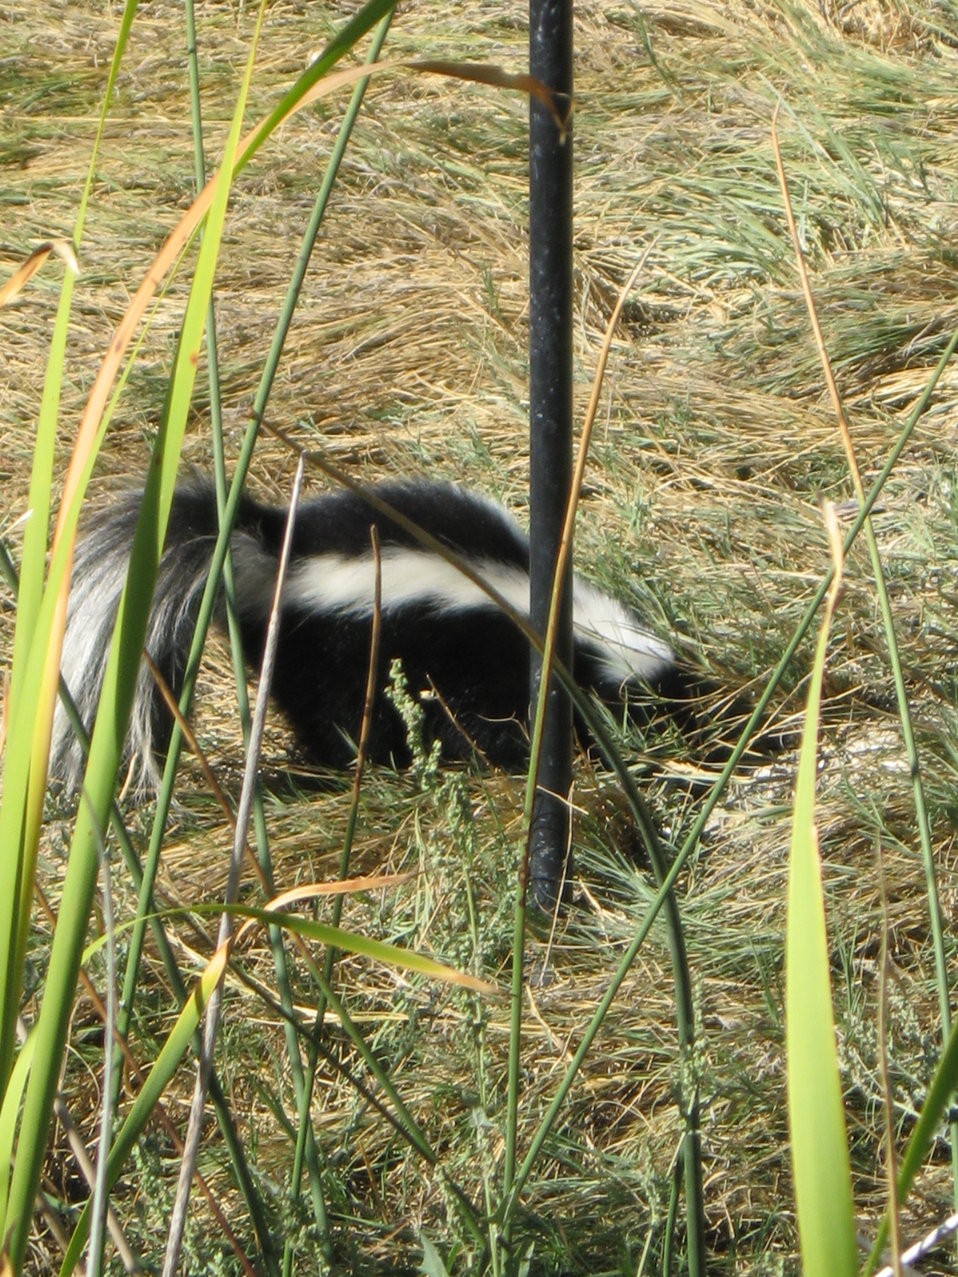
Skunk at the Bird Feeder

A striped skunk helps clean up the leftovers at a Bear River Migratory Bird Refuge bird feeder in September 2010.